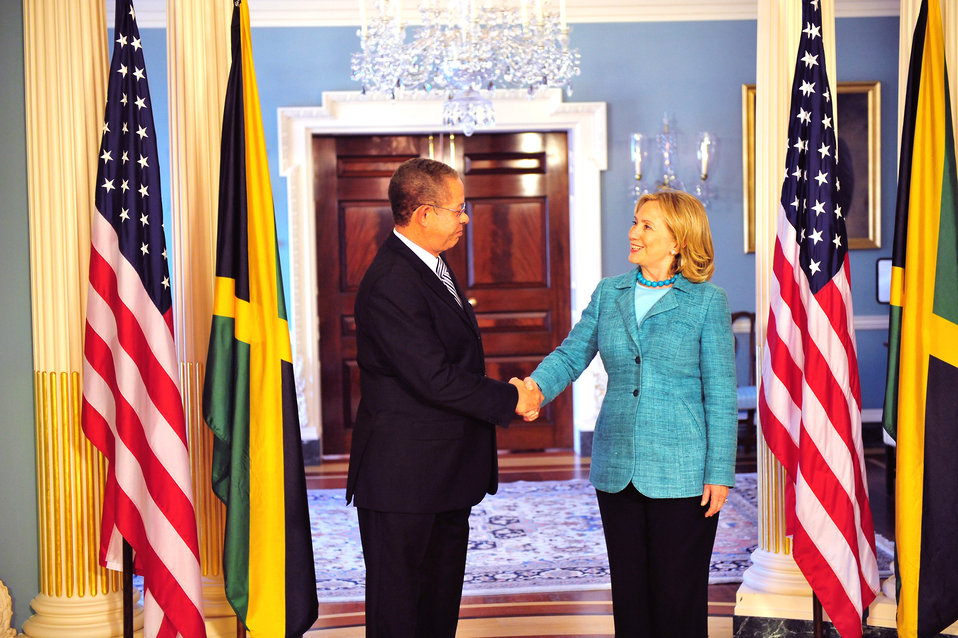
Secretary Clinton Shakes Hands With Jamaican Prime Minister Golding

U.S. Secretary of State Hillary Rodham Clinton shakes hands with Jamaican Prime Minister Bruce Golding after their bilateral meeting, at the U.S. Department of State in Washington, D.C., on June 6, 2011.